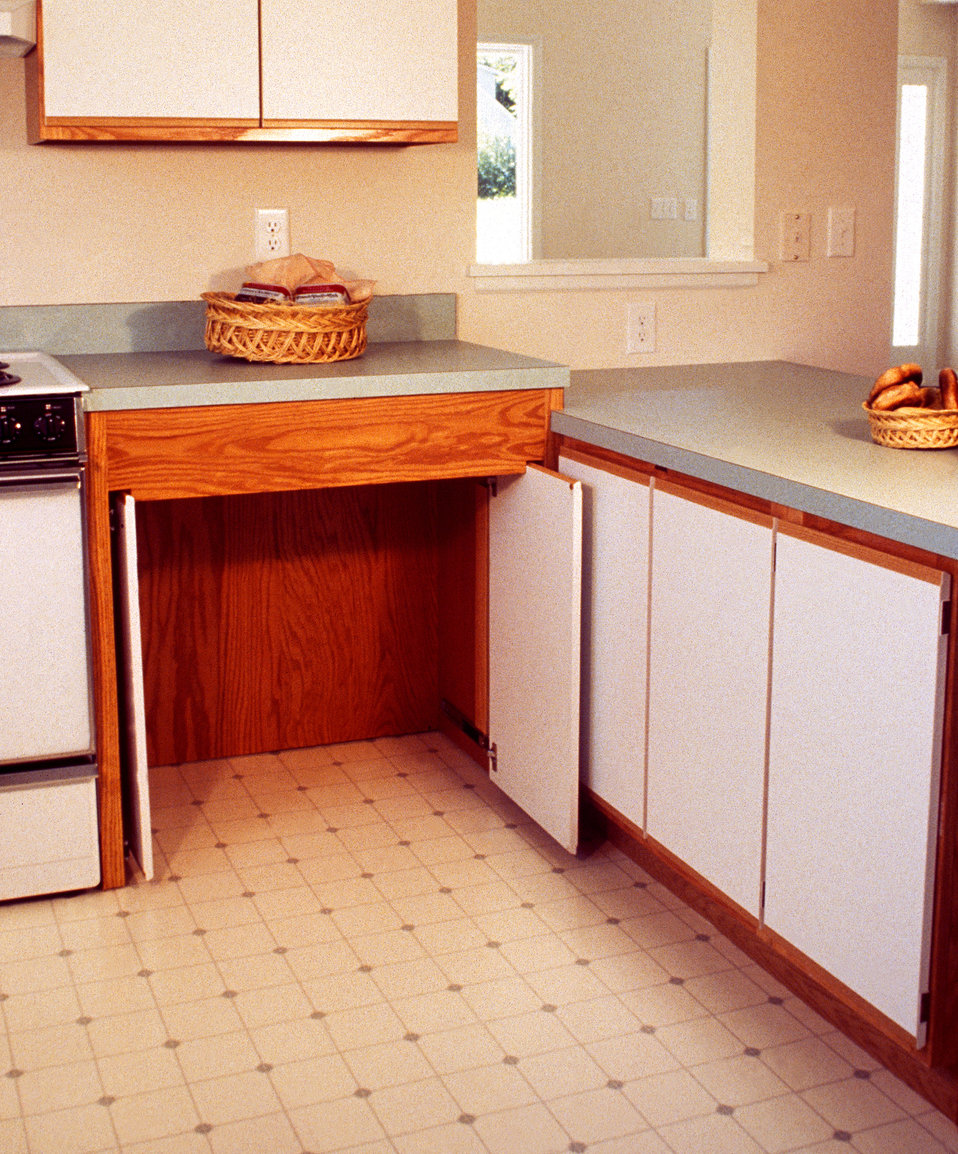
This 1994 image depicted a kitchen in which the cabenitry was ergonomically-designed in order to accommodate the widest possible group of end users. These kitchen base cabinets easily converted into knee-spaces critical for people using wheelchairs, as well as those with stamina or balance limitations, who had to sit while completing extended food-preparation activities. The cabinet design included retractable doors that could be slid underneath the counter, and rolling cart storage that could be removed, thereby, opening up the knee-spaces, which accommodated wheelchair users quite comfortably. Note that the adaptable cabinet had been located in a place that would assist with both the use of the range, and facilitate in reaching wall cabinets above.